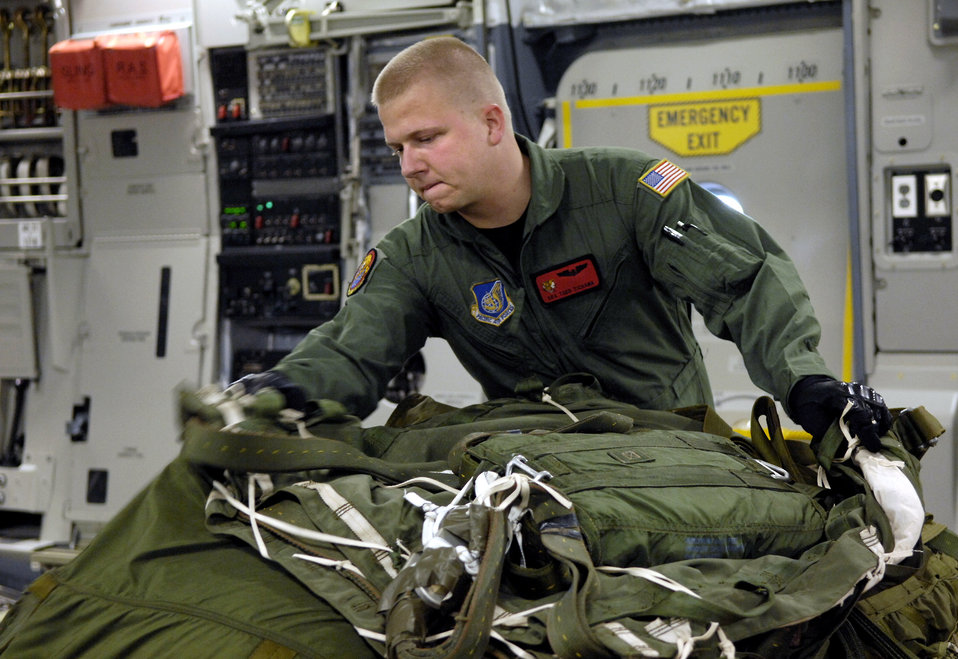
Hickam Airmen conduct 4-ship C-17 airdrop training

Senior Airman Todd Tichawa prepares to rig an extractions chute on his C-17 Globemaster III Aug. 13 at Hickam Air Force Base, Hawaii. Airman Tichawa, a loadmaster from the 535th Airlift Squadron, is taking part in a four-ship, multi-element airdrop training mission to maintain currency and proficiency.